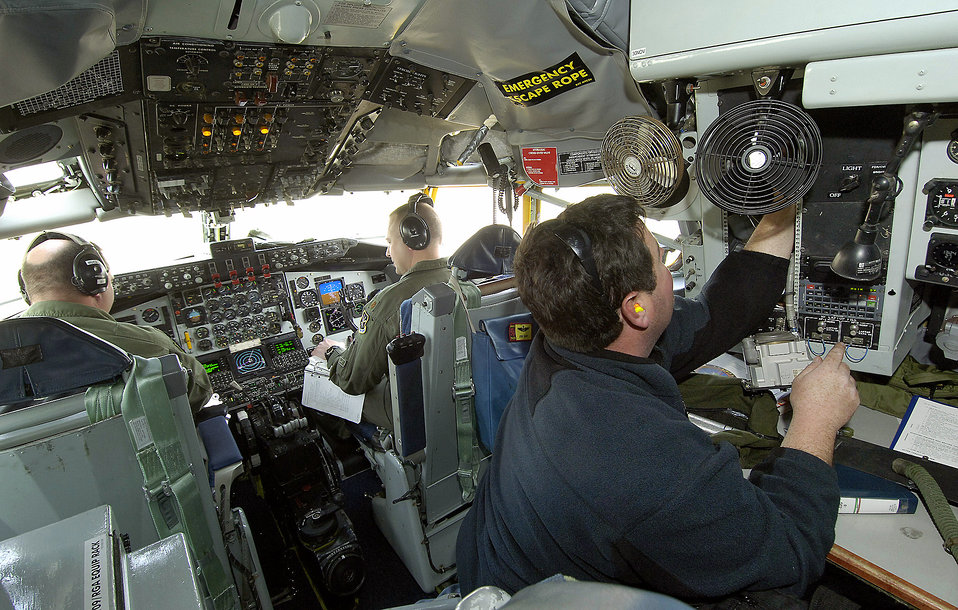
10th Flight Test Squadron

Aircrews from the 10th Flight Test Squadron work closely with Oklahoma Air Logistics Center maintenance professionals during pre-flight inspections on aircraft fresh from the depot at Tinker Air Force Base, Okla. Here, engine mechanic Matt Jennings, from the 564th Aircraft Maintenance Squadron, along with KC-135 Stratotanker pilots Maj. Kelly Buck (left) and Maj. John Cary are running a meticulous pre-flight inspection that may take up to three hours. Following that, the aircraft will be flown to ensure its air-worthiness.